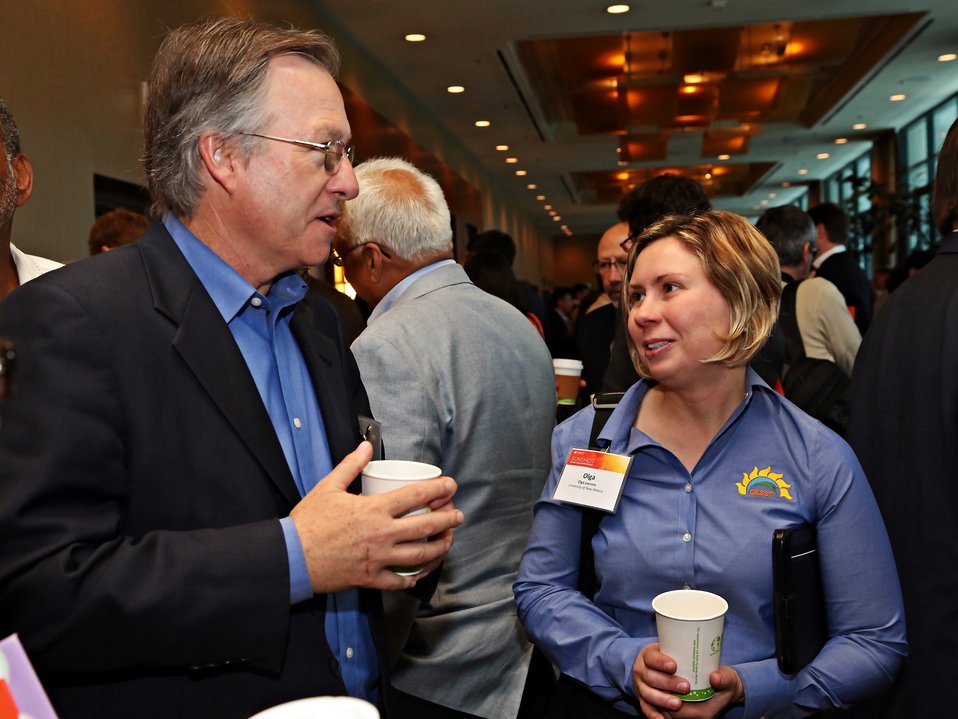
Day 2 Keynote Session 17

Attendees discussing at a keynote session break.